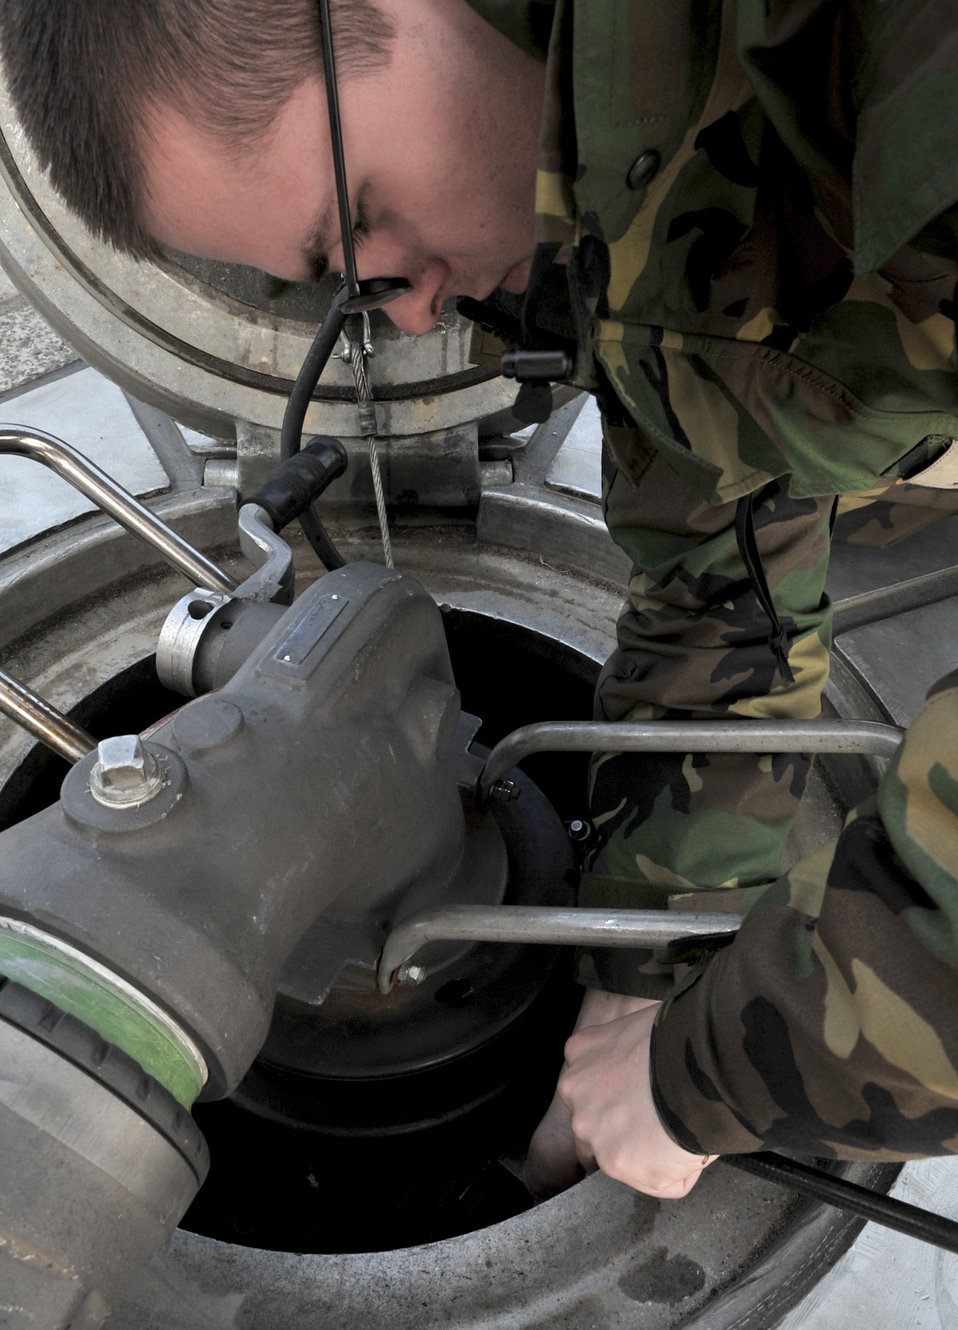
Aircraft ready for Odyssey Dawn

Airman 1st Class Jason O'Connor makes preparations to refuel a C-17 Globemaster III March 29, 2011, at Ramstein Air Base, Germany, in support of Operation Odyssey Dawn. O'Connor is a fuels distribution operator assigned to the 86th Logistics Readiness Squadron.